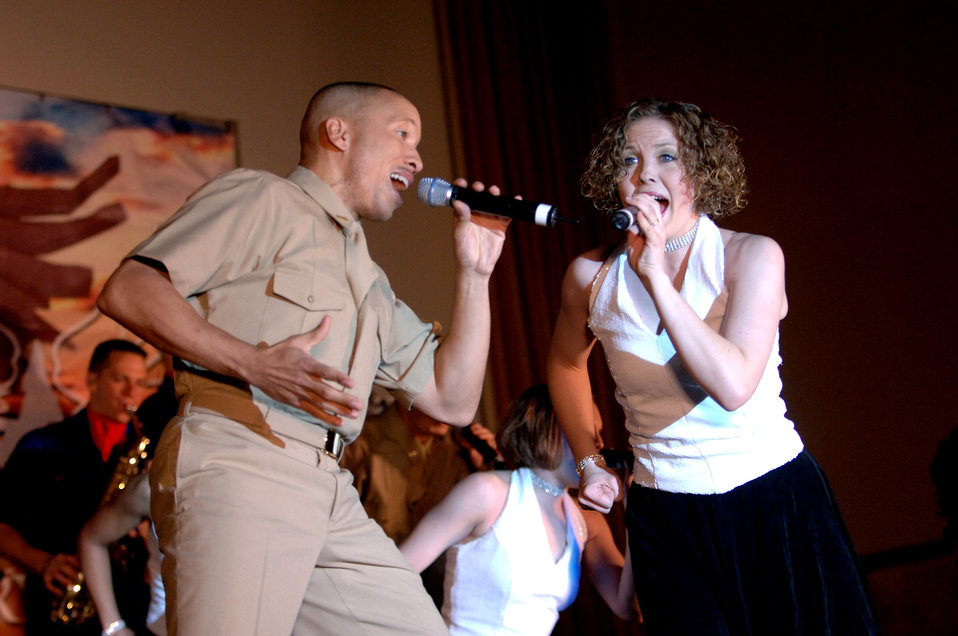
Tops In Blue put on a show for Airmen, Soldiers at Balad

Tops In Blue vocalists Tech. Sgt. Keith Martin and Airman 1st Class Faith Walker sing a duet during a performance April 28 at Balad Air Base, Iraq. Thirty eight active-duty Airmen with the Air Force's premier expeditionary entertainers set out in mid-April to kick off their 2007 tour singing and dancing their way through the area of responsibility. Sergeant Martin is an information manager with the 43rd Fighter Training Squadron at Columbus Air Force Base, Miss. Airman Walker is a food service apprentice with the 319th Services Squadron at Grand Forks AFB, N.D. Tops In Blue will be on tour through February 2008.